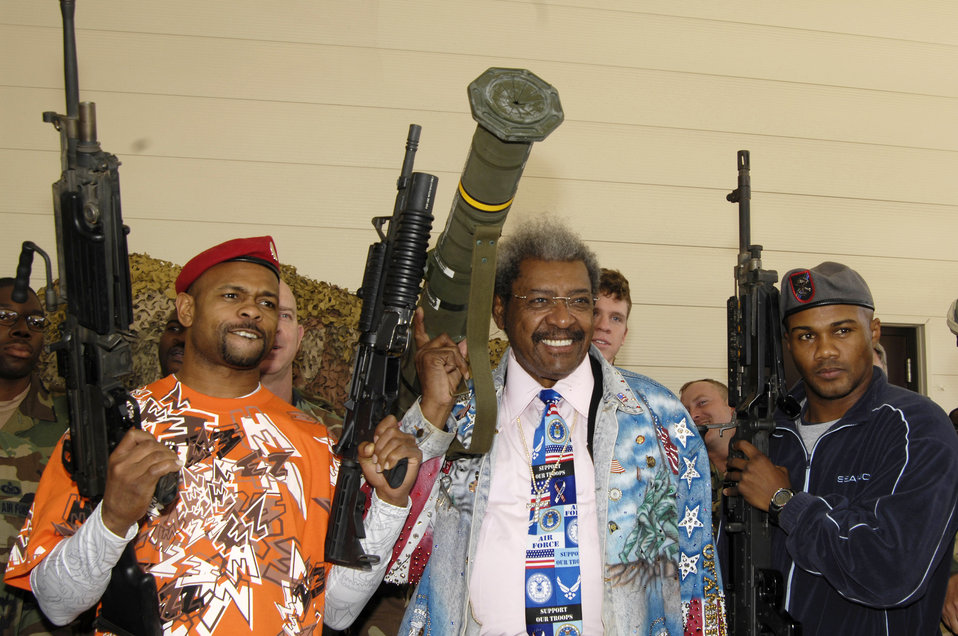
Boxing trio visits Hurlburt Field Airmen

Roy Jones Jr., Don King and Felix Trinidad pose with an M-249, M-203, AT-4 rocket launcher and an M-240 during their visit to the 720th Advanced Skills Training flight Dec. 5 at Hurlburt Field, Fla. The boxers and their promoter visited Hurlburt Field as part of their tour of military installation to show support for military members.